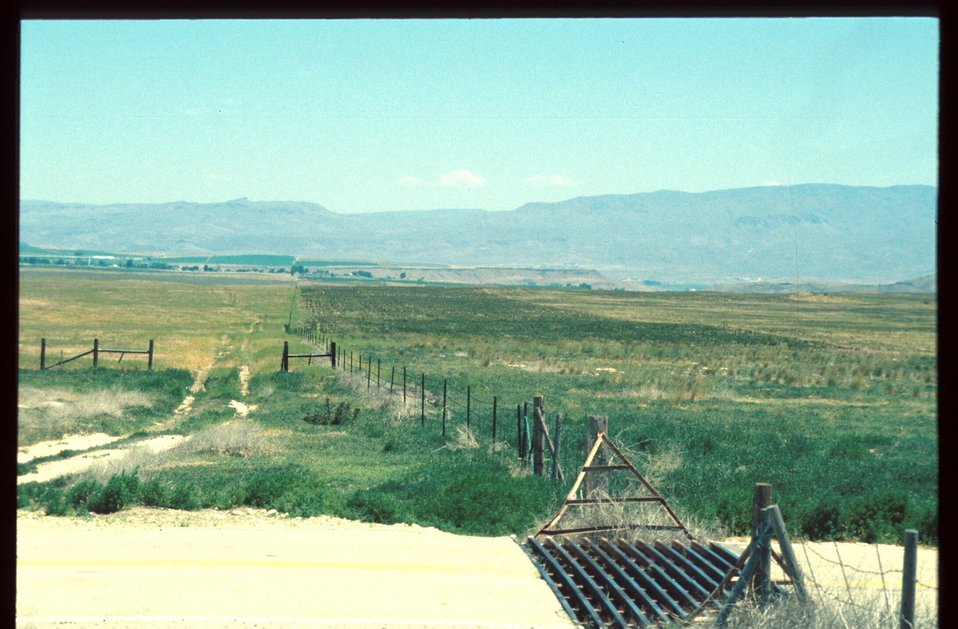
Range Restoration Project